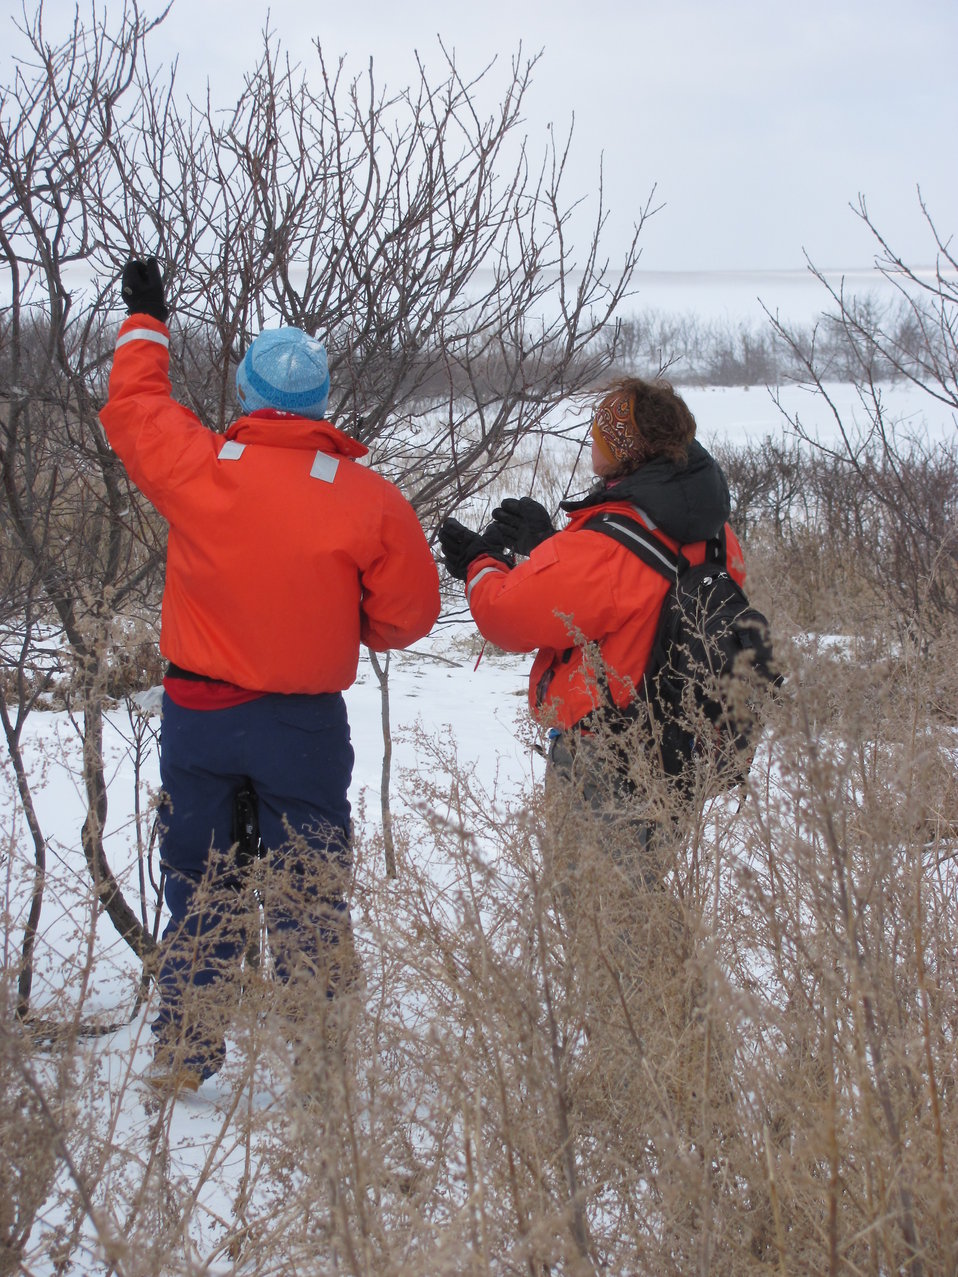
Marking and placing nest tags around the south island of Chase Lake National Wildlife Refuge helps us monitor heron and egret nest populations.

Staff from Northern Prairie Wildlife Research Center (Jamestown, ND) and USFWS place the nest tags on a visible branch where heron and egret nest colonies are located. Each tag has a recorded GPS location to assist in nest counting.